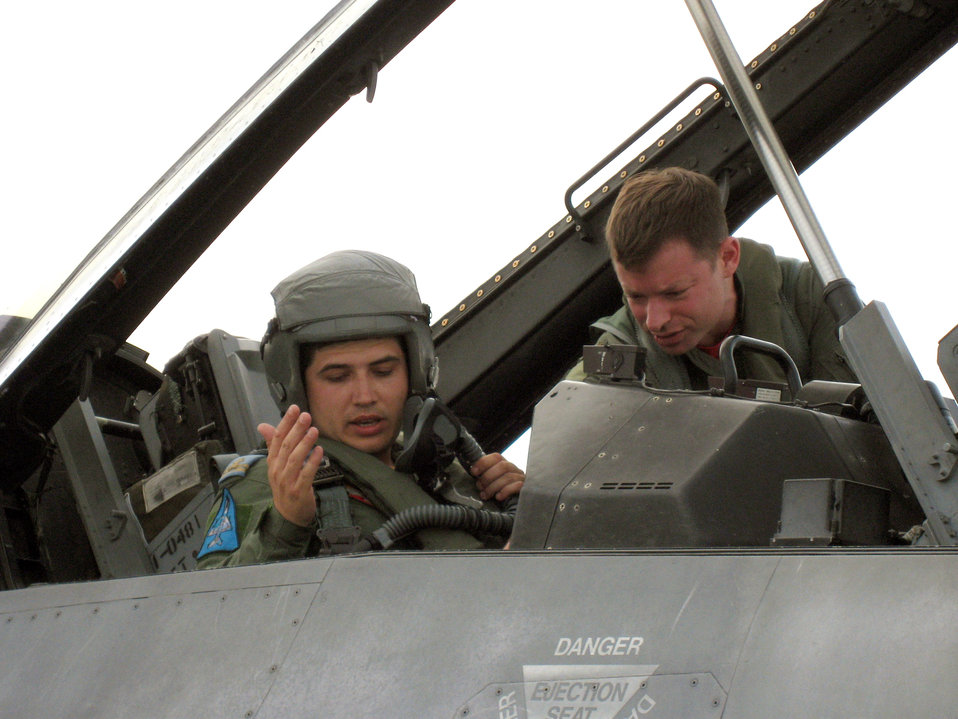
Viper Lance pilots trade rides

Maj. Mike Dunkel provides a rundown of controls in an F-16 Fighting Falcon cockpit for 1st Lt. Lates Catalin at Mihail Kogalniceanu Air Base, Romania, on Aug. 11, during Viper Lance 2006. Lieutenant Catalin is a MiG-21 pilot in the Romanian air force. Major Dunkel is an F-16 pilot with the 22nd Expeditionary Fighter Squadron.